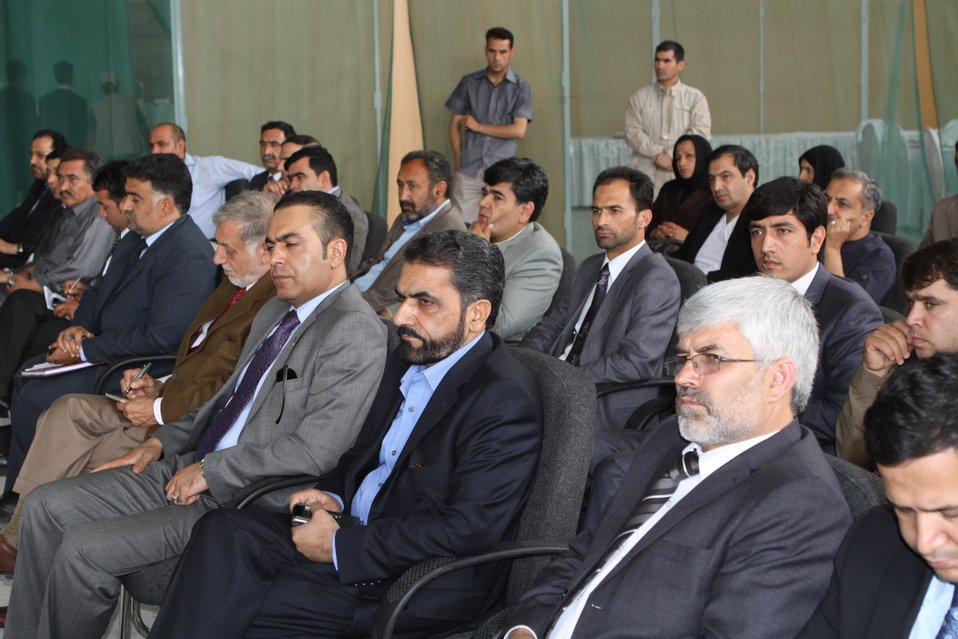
100525 Hirat Marble Conference 162